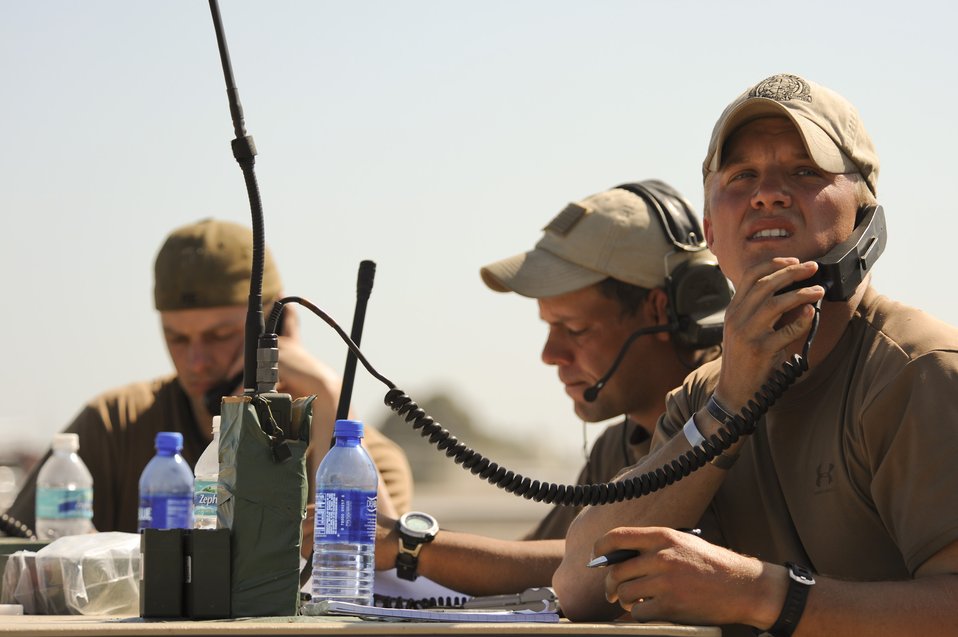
Combat controllers at work

Combat controllers talk to aircraft circling the Toussaint L'Ouverture International Airport in Port-au-Prince, Haiti, Jan. 23, 2010. The Airmen are from the 23rd Special Tactics Squadron at Hurlburt Field, Fla. Aircraft from all over the world are flying in and out of the small airport to drop off humanitarian aid and transport people out of the Haiti after the devasting earthquake that hit the nation Jan. 12.